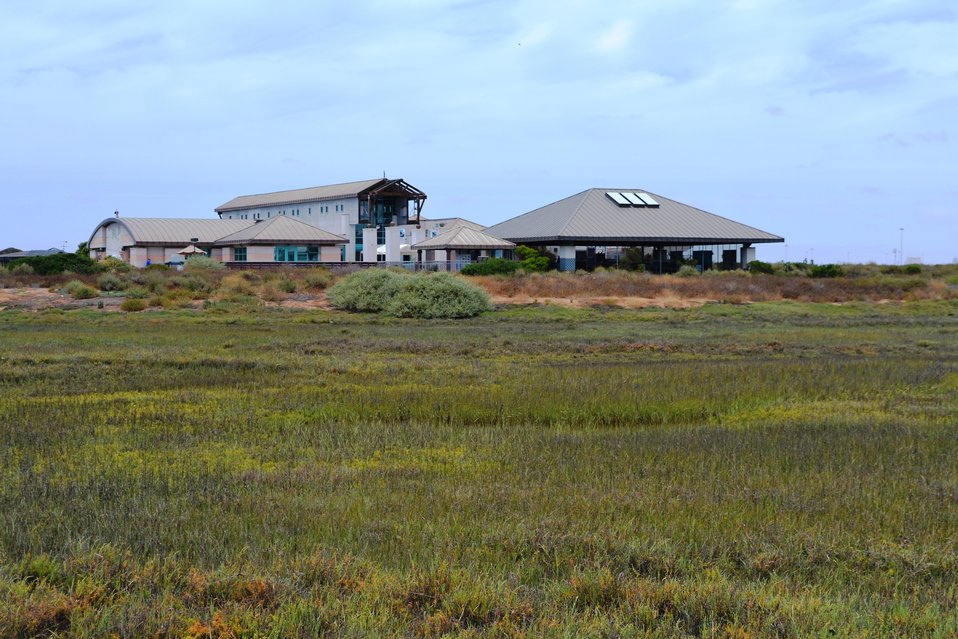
Chula Vista Nature Center on the Sweetwater Marsh Unit of the San Diego Bay NWR

The Chula Vista Nature Center is located on Sweetwater Marsh, and has been in operation since 1987, approximately 1 year before the marsh became a National Wildlife Refuge. The Nature Center became a non-profit in 2010, and provides high-quality environmental education programs throughout the year. Please visit www.chulavistanaturecenter.org for more information!